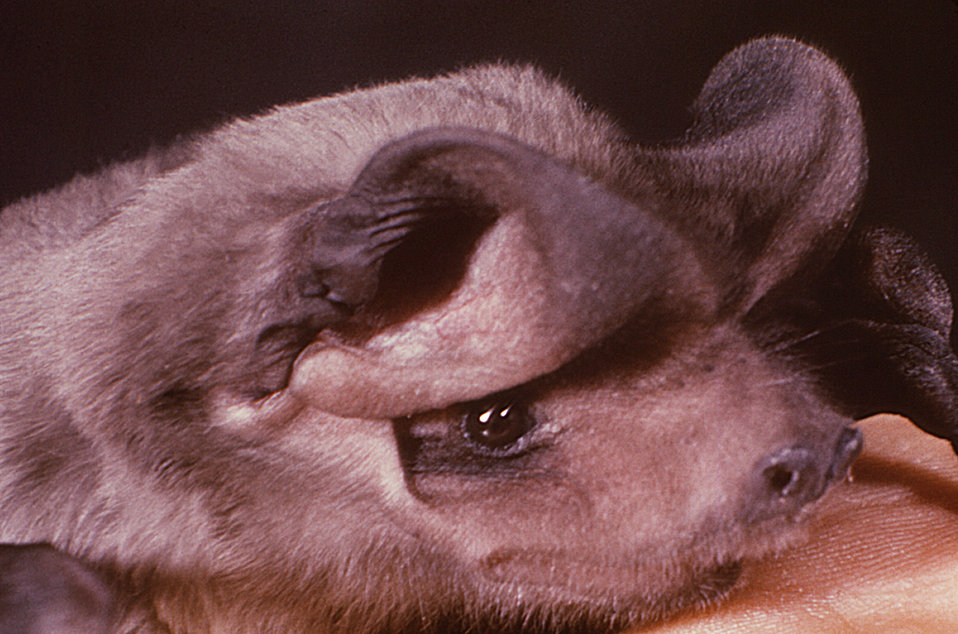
This image depicts a lateral view of a free-tailed bat's head region. Though its specie is unidentified, it was labeled as a member of the genus Tadarida.